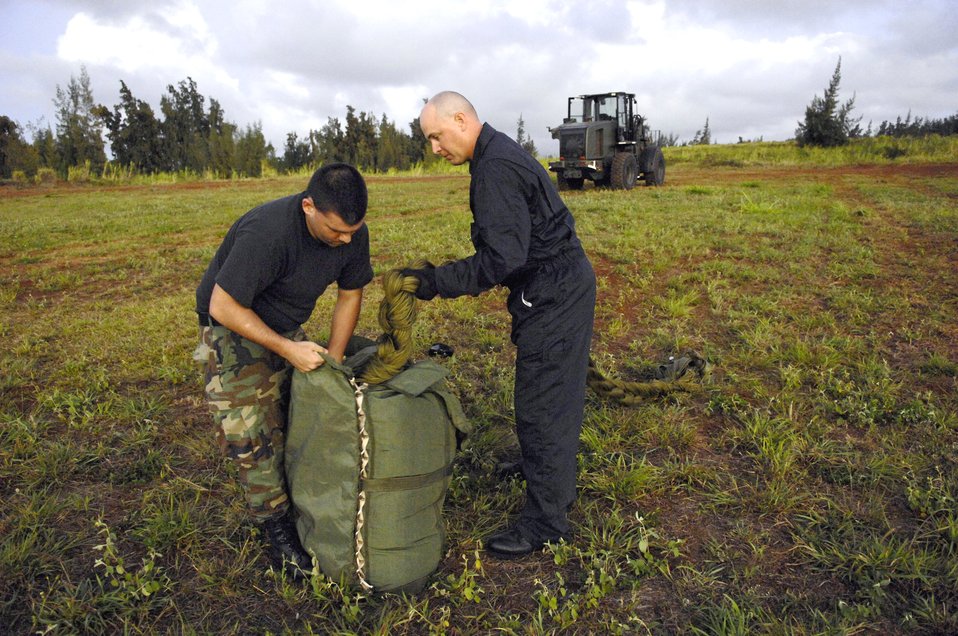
Load 'em up, drop 'em out

Airman 1st Class Justin Stevens and Tech. Sgt. Brian Snow collect a parachute from a practice airdrop bundle after being drop by a C-17 Globemaster III June 11 at the Kahuku Training Range in Hawaii. The C-17s, from the 535th Airlift Squadron at Hickam Air Force Base, are conducting their quarterly airdrop qualifications. The Airmen are air transportation specialist from the 15th Logistics Readiness Squadron Combat Mobility Element.